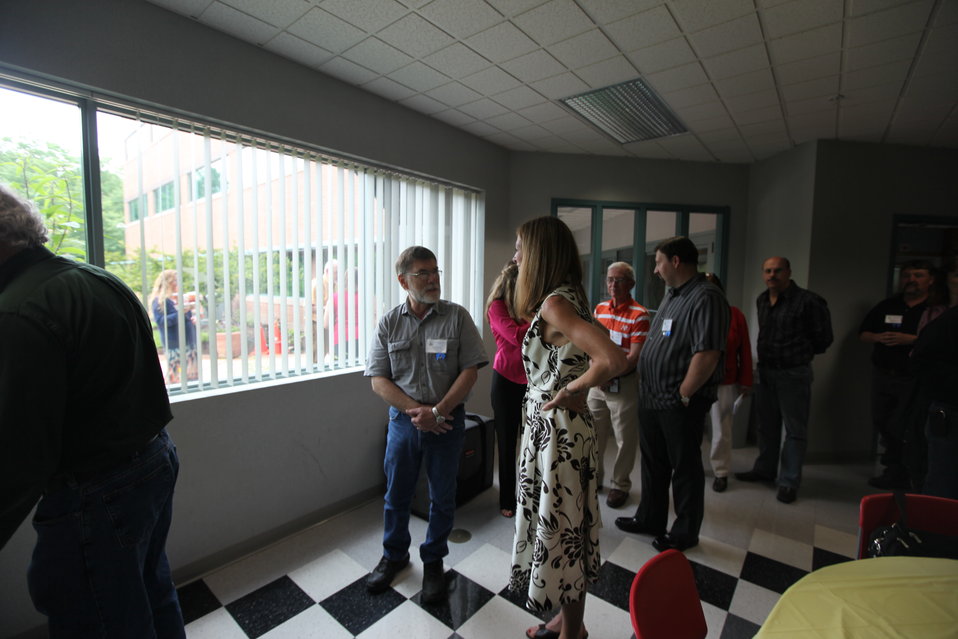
Northeast Region Employee Appreciation Awards

Luncheon